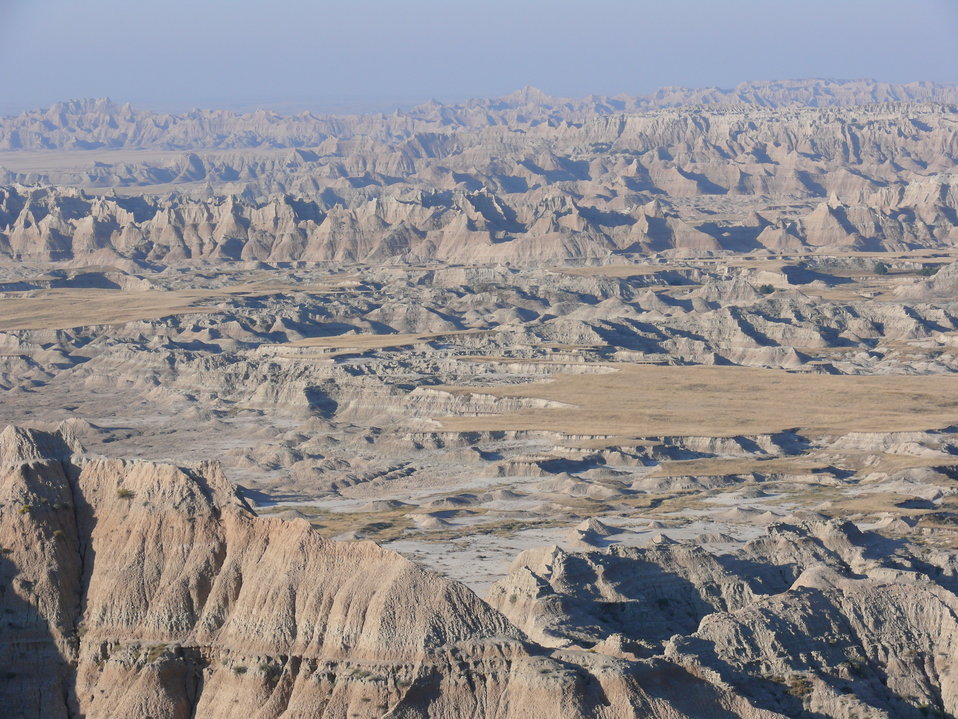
Badlands Sunrise

After a night of trapping black-footed ferrets in the Conata Basin, South Dakota, we were rewarded with this sight of Badlands National Park shortly after sunup.

Credit: Dan Mulhern / USFWS

Photo Contest Entry #137